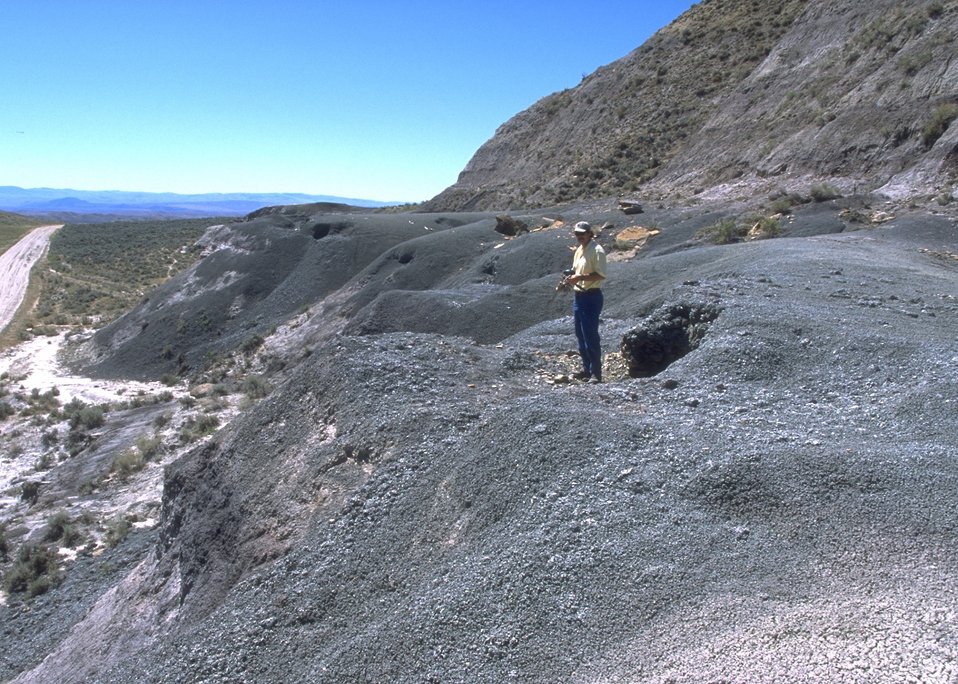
General view of area where fossils are found showing areas of digging, Cedar Ridge Paleo area, Worland Field Office.